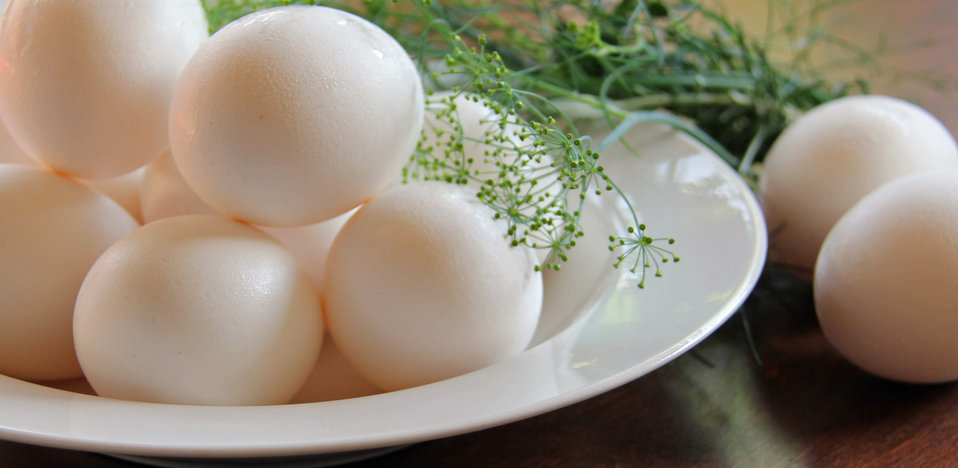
Bowl of eggs with fresh herbs

White bowl of eggs with fresh herbs.